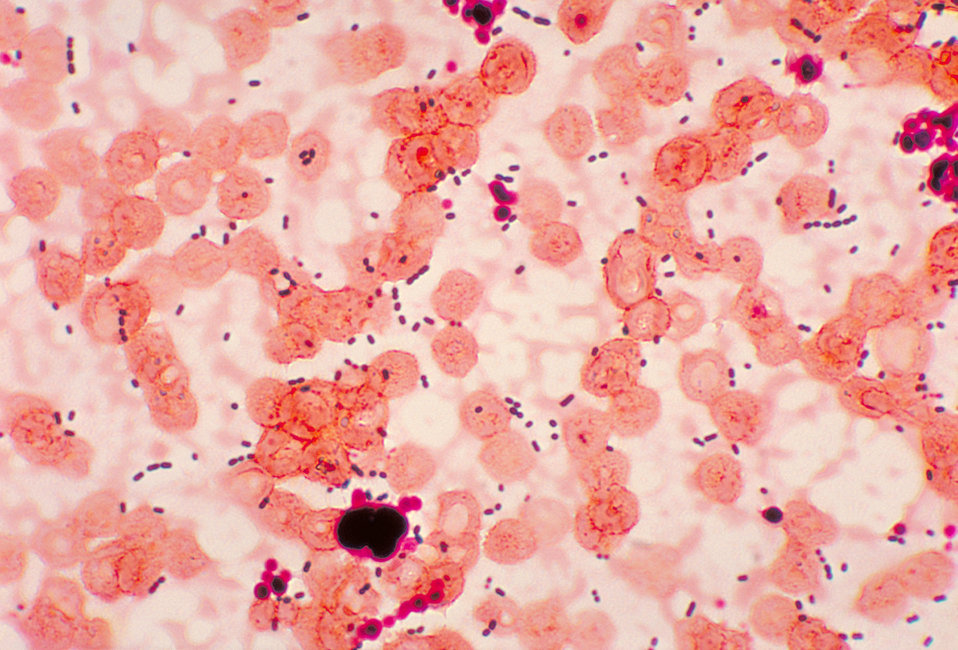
This photomicrograph reveals cocci-shaped Enterococcus sp. bacteria taken from a pneumonia patient.